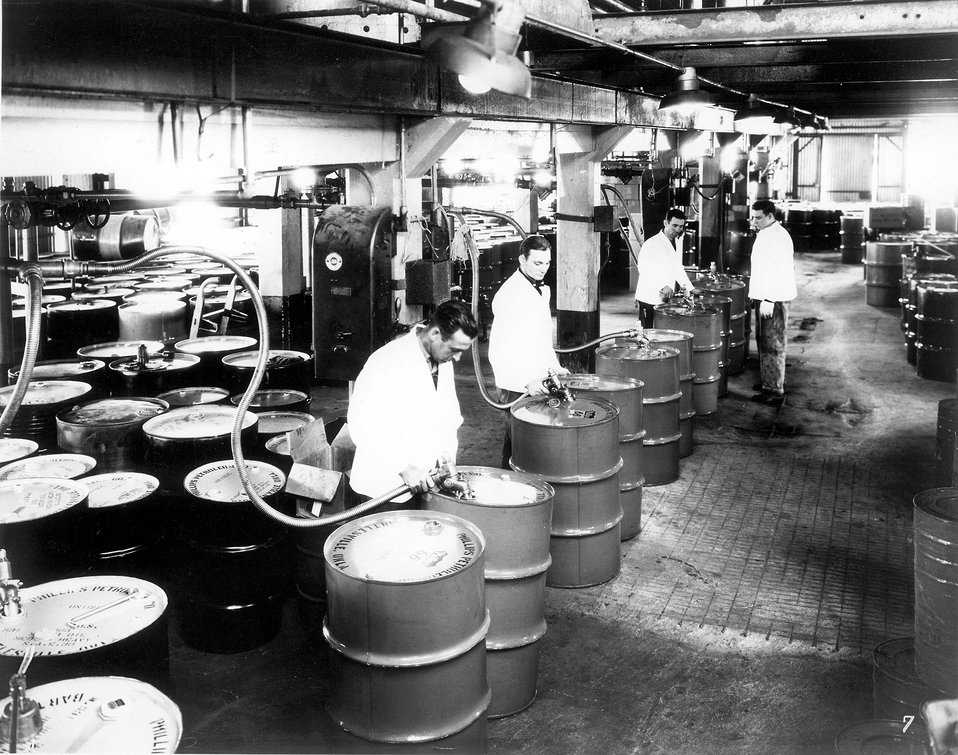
Filling lube oil drums.